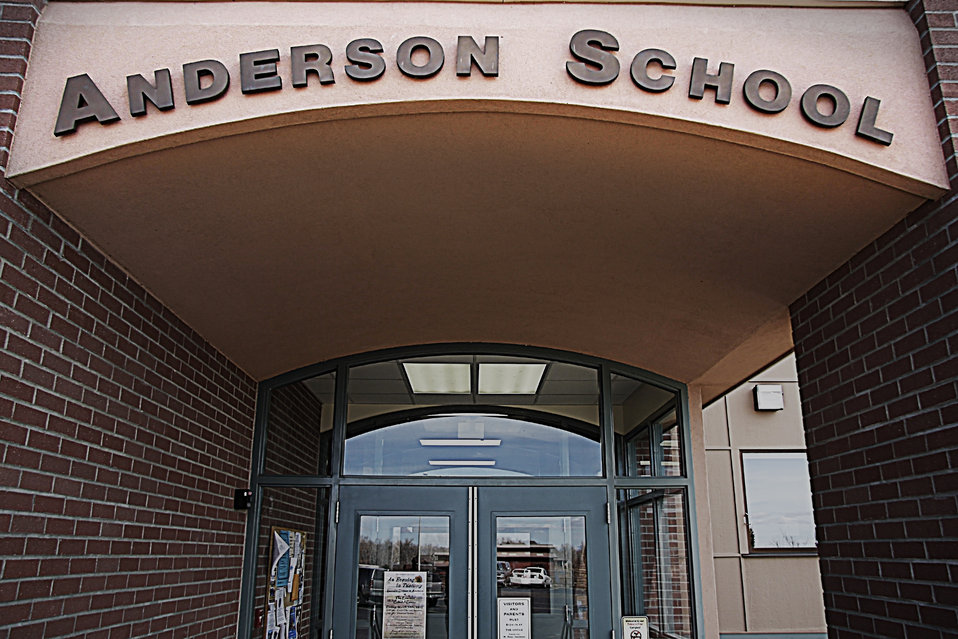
Blog Photo Anderson School Montana

The front entrance of Anderson Public School in rural Gallatin County, Montana.